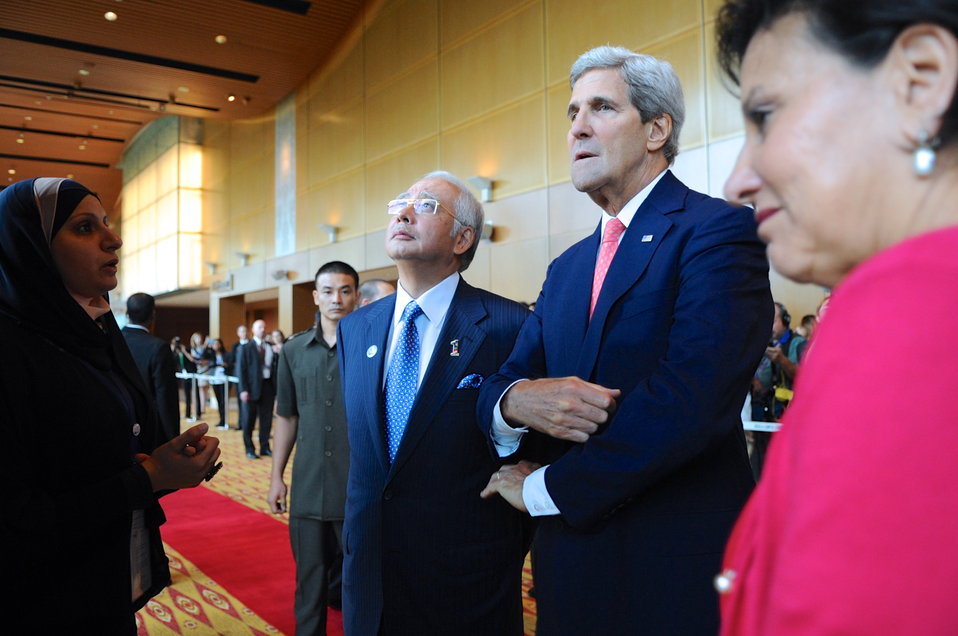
Secretaries Kerry, Pritzker Observe Innovation Showcase

U.S. Secretary of State John Kerry, Malaysian Prime Minister Najib Razak, and U.S. Commerce Secretary Penny Pritzker listen to an exhibitor at the Innovation Showcase, held as part of the Global Entrepreneurship Summit in Kuala Lumpur on October 11, 2013.